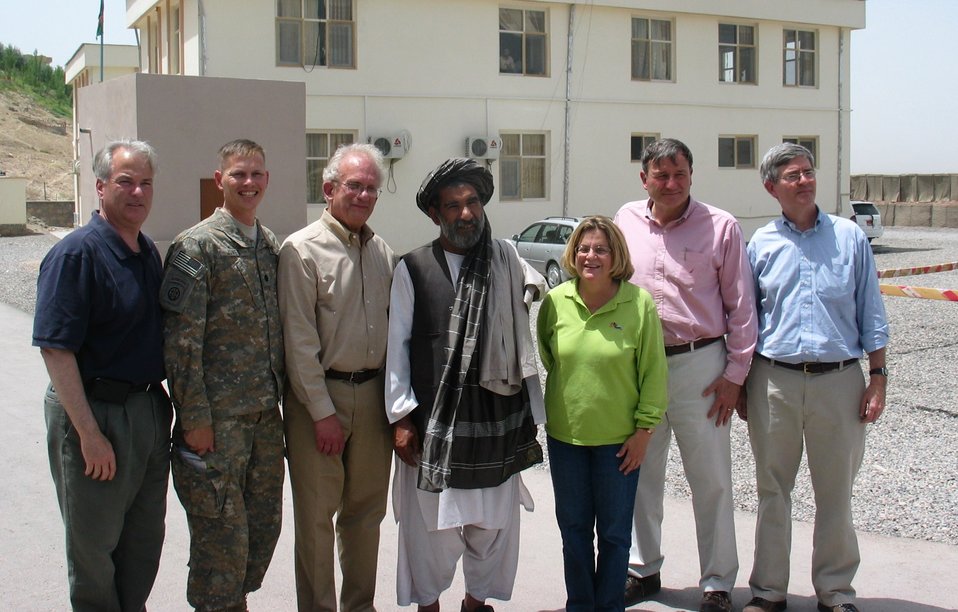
CODEL Berman